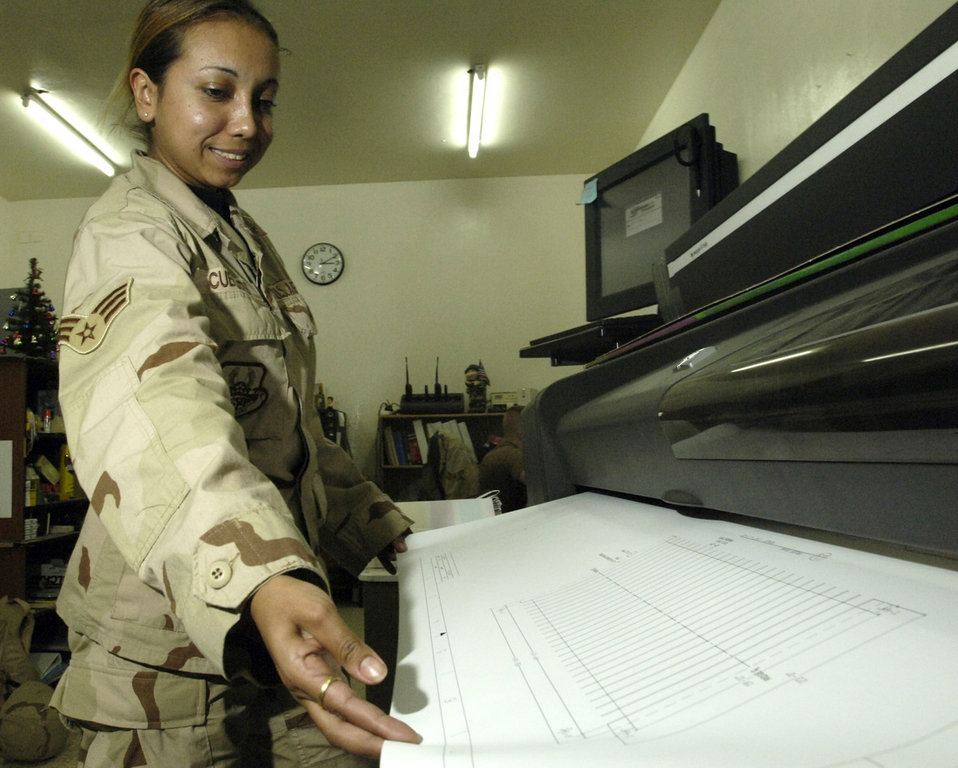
Drawing up plans

BALAD AIR BASE, Iraq (AFPN) -- Senior Airman Angelica Cubillos guides a map on a plotter as it is being printed. Airman Cubillos is with the 732nd Expeditionary Civil Engineer Squadron.